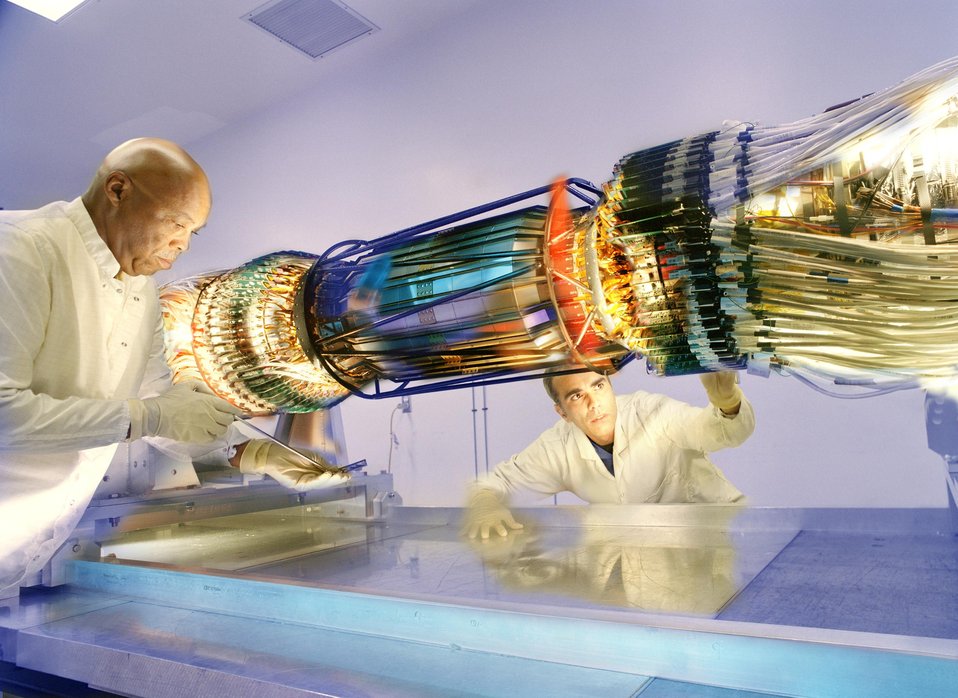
THE SILICON VERTEX TRACKER OF THE BABAR DETECTOR AT THE STANFORD LINEAR ACCELERATOR FACILITY.

THE SILICON VERTEX TRACKER IS THE HEART OF THE BABAR EXPERIMENT AT SLAC. HERE PHYSICISTS ARE PUTTING THE FINISHING TOUCHES ON IMPROVEMENTS TO THE DETECTOR. THE BABAR DETECTOR, PART OF SLAC'S B FACTORY SYSTEM, WILL PRODUCE B AND ANTI-B MESONS, PARTICLE-ANTIPARTICLE PAIRS SO THAT SCIENTISTS CAN INVESTIGATE THE MATTER-ANTIMATTER ASYMMETRY IN NATURE.